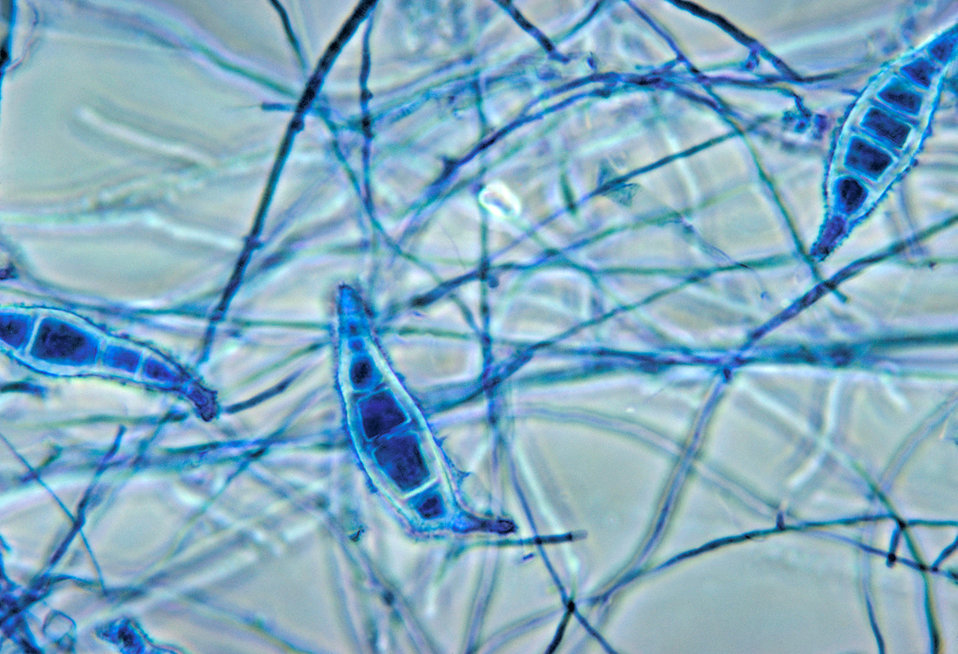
This micrograph depicts the irregularly shaped macroconidia from the fungal organism Microsporum distortum.